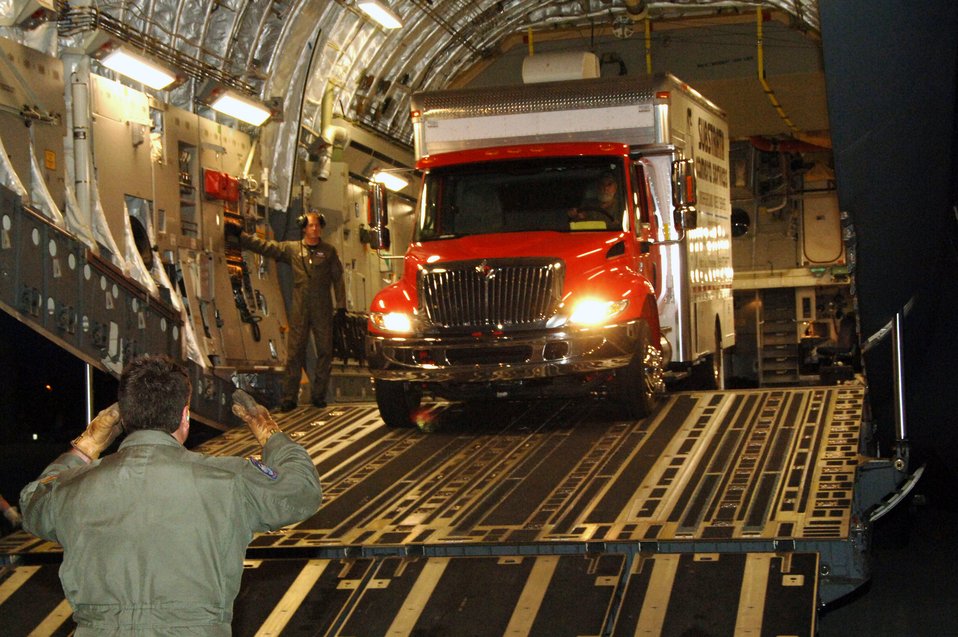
To the rescue

Airmen from the 151st Air Refueling Wing in Salt Lake City assist with the arrival of a C-17 Globemaster III from the Mississippi Air National Guard's 172nd Airlift Wing. The C-17 transported equipment to assist in rescue operations for six stranded Utah miners.